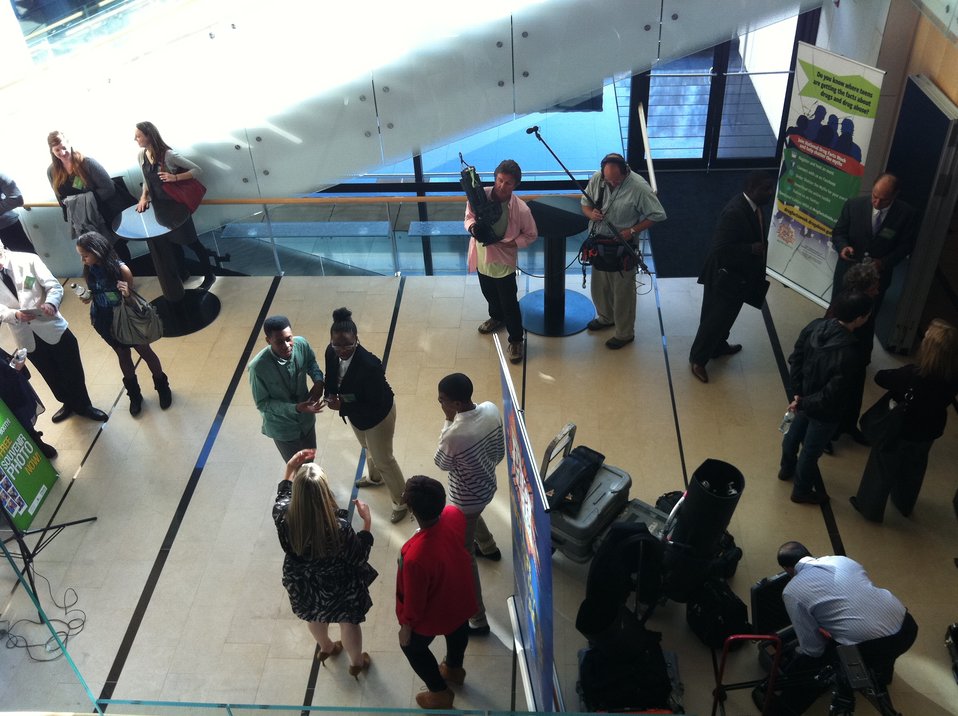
Mentor 3